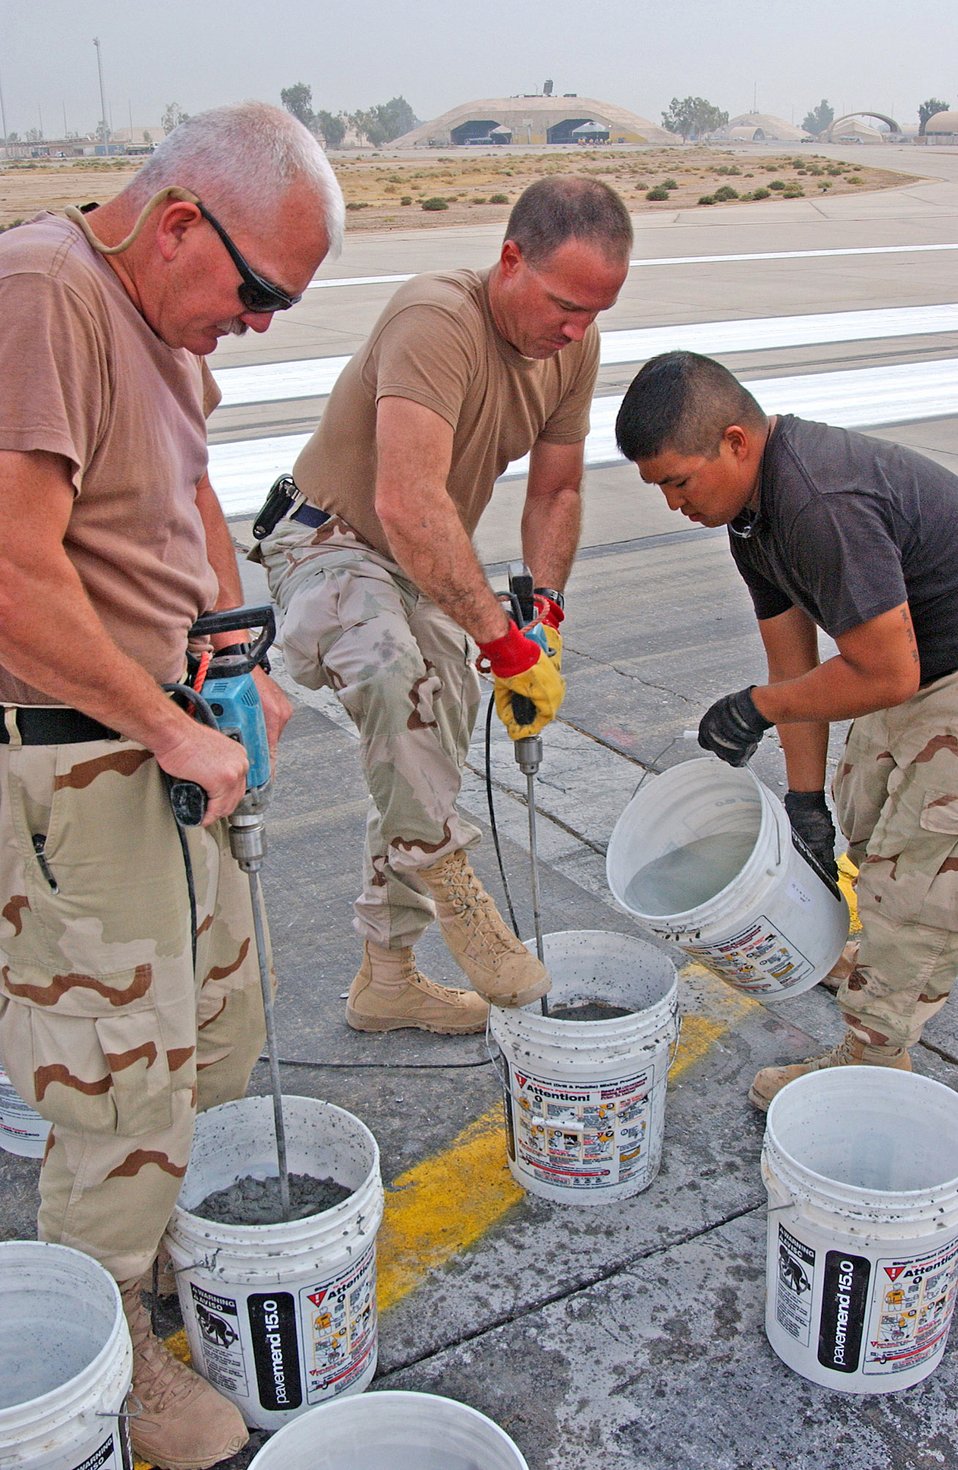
Flightline health

BALAD AIR BASE, Iraq (AFPN) -- (Left to right) Tech. Sgt. James Goetz deployed from Dyess Air Force Base, Texas, and Tech. Sgt. Weldon Bales deployed from Eglin Air Force Base, Fla. mixes Pavemend a quick set concrete as Senior Airman Tad Sindler deployed from Davis-Monthan Air Force Base, Ariz., pours water into the buckets of quick set concrete to mix it faster. Sergeant Goetz and Airman Sindelir are part of the 332nd Expeditionary Civil Engineer Squadron Spall Team and Sergeant Bales is the 332nd Expeditionary Operation Support Squadron Airfield manager, they work together to identify and fix cracks and fragment in the Balad airfield.